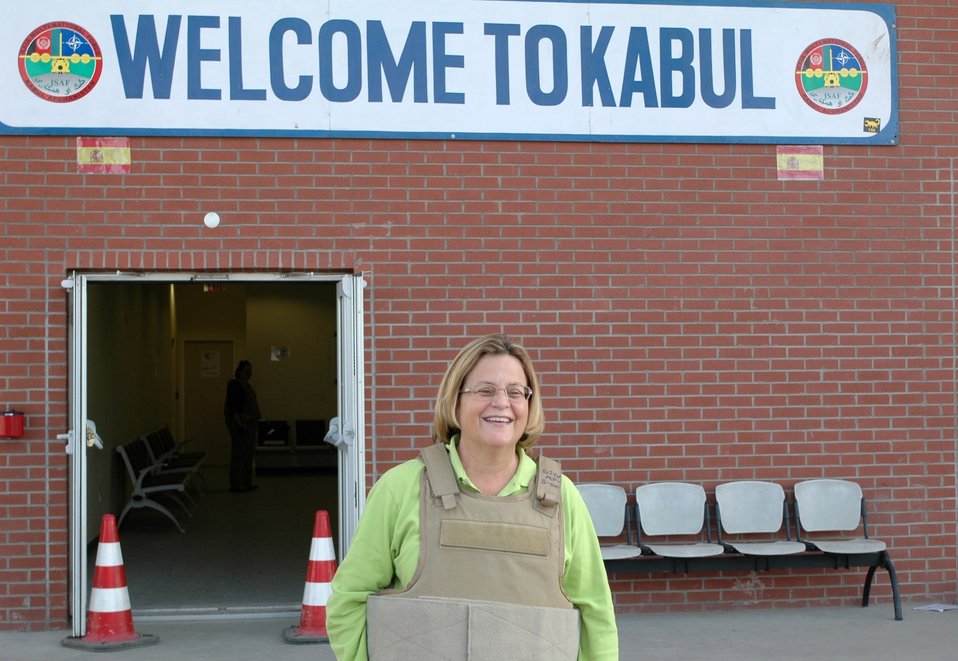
CODEL Berman